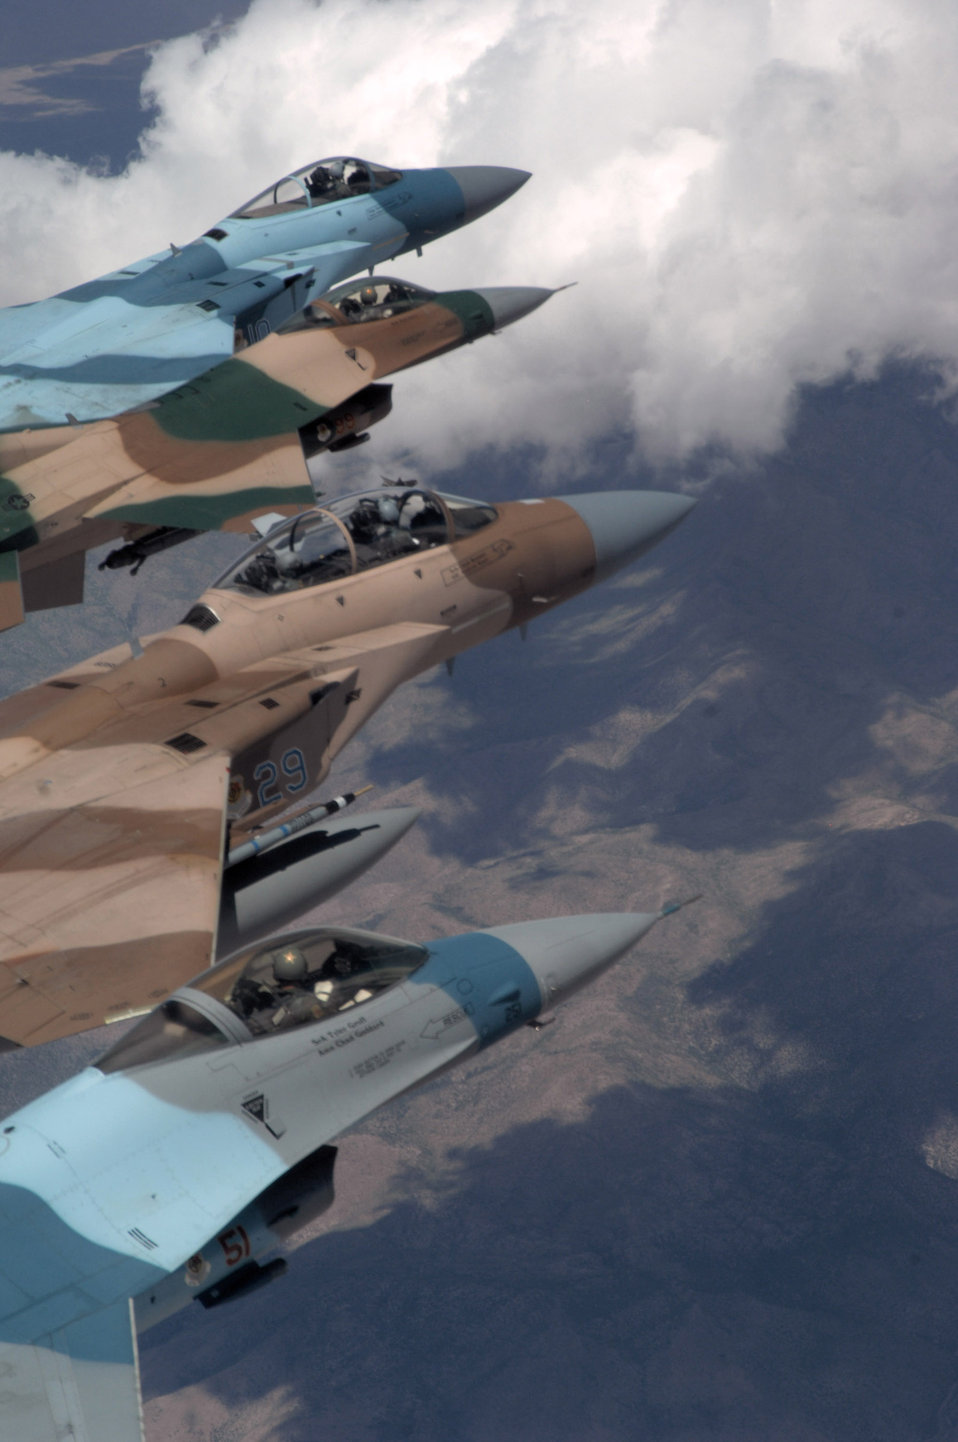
Aggressors provide challenging, realistic threat replication

A flight of Aggressor F-15 Eagles and F-16 Fighting Falcons fly in formation June 5 over the Nevada Test and Training Range. The jets are assigned to the 64th and 65th Aggressor squadrons at Nellis Air Force Base, Nev. The F-15's air superiority is achieved through a mixture of unprecedented maneuverability and acceleration, range, weapons and avionics. The F-16's maneuverability and combat radius (distance it can fly to enter air combat, stay, fight and return) exceeds that of all potential threat fighter aircraft.